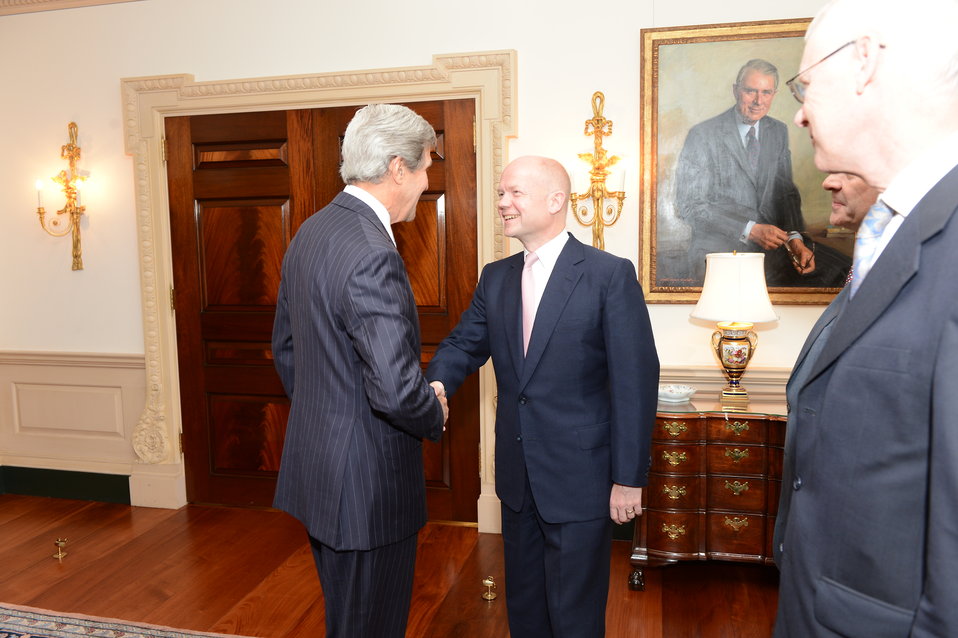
Secretary Kerry and UK Foreign Secretary Hague Shake Hands

U.S. Secretary of State John Kerry shakes hands with UK Foreign Secretary William Hague before their bilateral meeting at the U.S. Department of State in Washington, D.C., on June 12, 2013.